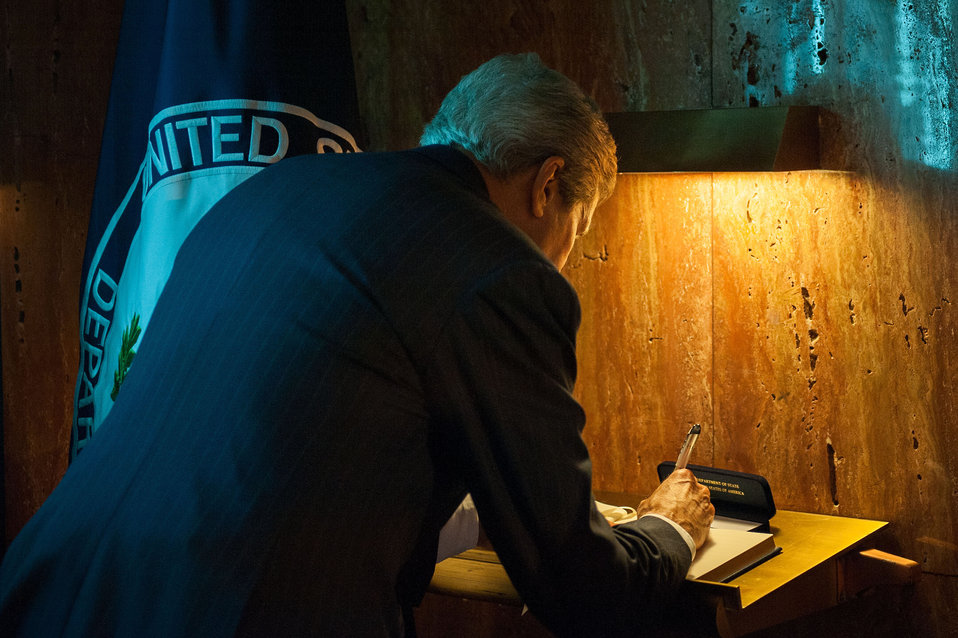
Secretary Kerry Signs the Guestbook at the Dedication of the Bureau of International Narcotics and Law Enforcement Affairs Memorial Wall Ceremony

U.S. Secretary of State John Kerry signs the guestbook during the dedication of the Bureau of International Narcotics and Law Enforcement Affairs memorial wall ceremony at the U.S. Department of State in Washington, D.C., on June 12, 2014. The memorial honors personnel who have died while participating in overseas criminal justice and counternarcotics assistance programs on behalf of the United States.